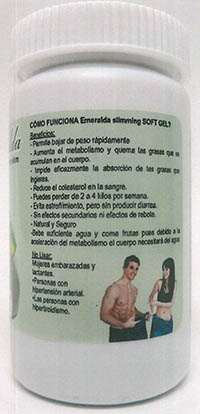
RECALLED – Dietary Supplement

March 25, 2014 – Product Recall – New Life Nutritional Center Issues Voluntary Nationwide Recall of Super Fat Burner, Maxi Gold and Esmeralda Dietary Supplements Due to the Presence of Undeclared Sibutramine and Phenolphthalein.